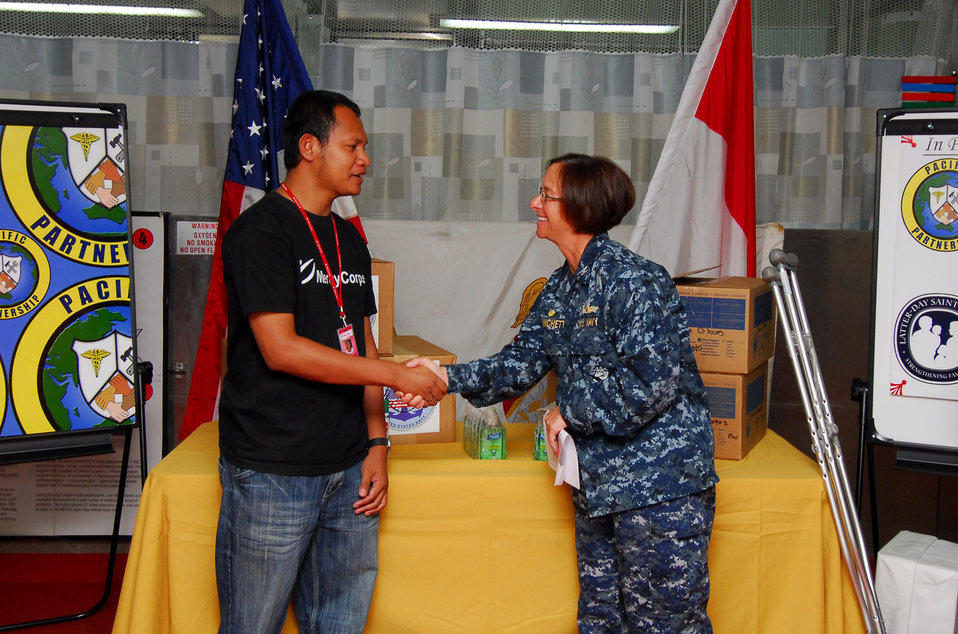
PP 2010 Commander Capt. Franchetti Greets Mercy Corp Head of Maluku Field Offices Bell

Pacific Partnership 2010 Commander Capt. Lisa M. Franchetti greets Mercy Corp head of Maluku field offices Florindo Michael Bell during a ceremony while aboard the Military Sealift Command hospital ship USNS Mercy (T-AH 19) on July 30, 2010. Mercy is in Ambon, Indonesia, participating in Sail Banda 2010, a series of events hosted by the Government of Indonesia to promote the future of small islands. Mercy’s participation features medical and dental care clinics and construction projects in and around Ambon, as well as on Seram Island.